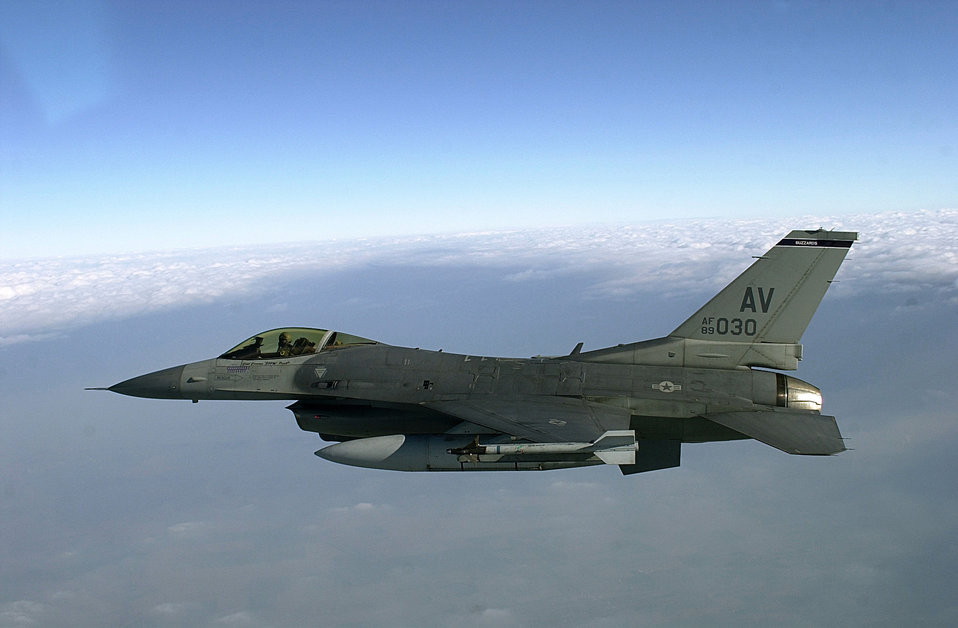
Italian job

OVER ITALY -- An U.S. F-16 Fighting Falcon flies towards Rimini, Italy to join with the Italian air force in a training mission. U.S. Air Forces from the 510th Fighter Squadron, Aviano Air Base, Italy and Italian Air Forces from the 83rd Combat Search and Rescue Squadron, Rimini, Italy, participated in a 4-day training mission from Feb. 5 to Feb. 8, 2001. The mission involved U.S. F-16 aircrews locating and authenticating survivors and coordinate pickup with Italian rescue crews. F-16s were also tasked with escorting helicopters to protect them from air and ground threats. This is the first ever tasking of a full-time combat search and rescue mission for F-16s from the 510th Fighter Squadron.